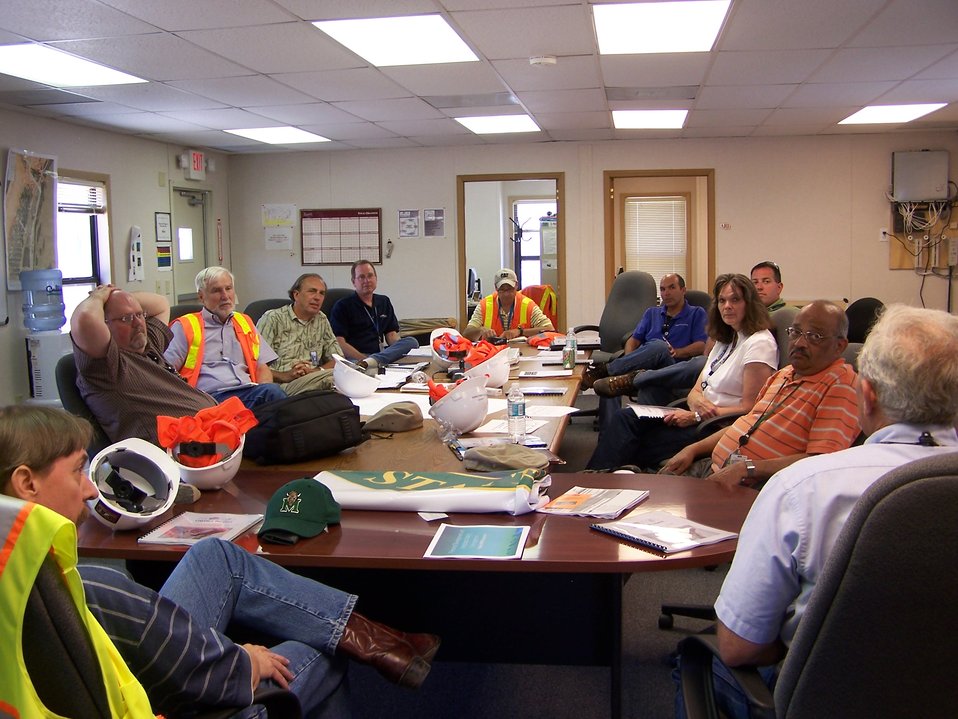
Moab IPT Meeting

The Moab Uranium Mill Tailings Remedial Action Project summoned its Integrated Project Team (IPT) at the end of June 2009 to assist in identifying efficiencies that could be implemented in the tailings material handling, conditioning, transporting, and disposal processes. The Moab Recovery Act project accelerates the existing project shipping schedule; therefore, there is not an IPT specific to Recovery work.

DOE established the IPT in 2005 to maximize project performance. The IPT is led by Donald Metzler, Moab Federal Project Director, and is composed of personnel from other DOE sites with previous uranium mill tailings remediation experience, safety experts, and project cost and schedule specialists.